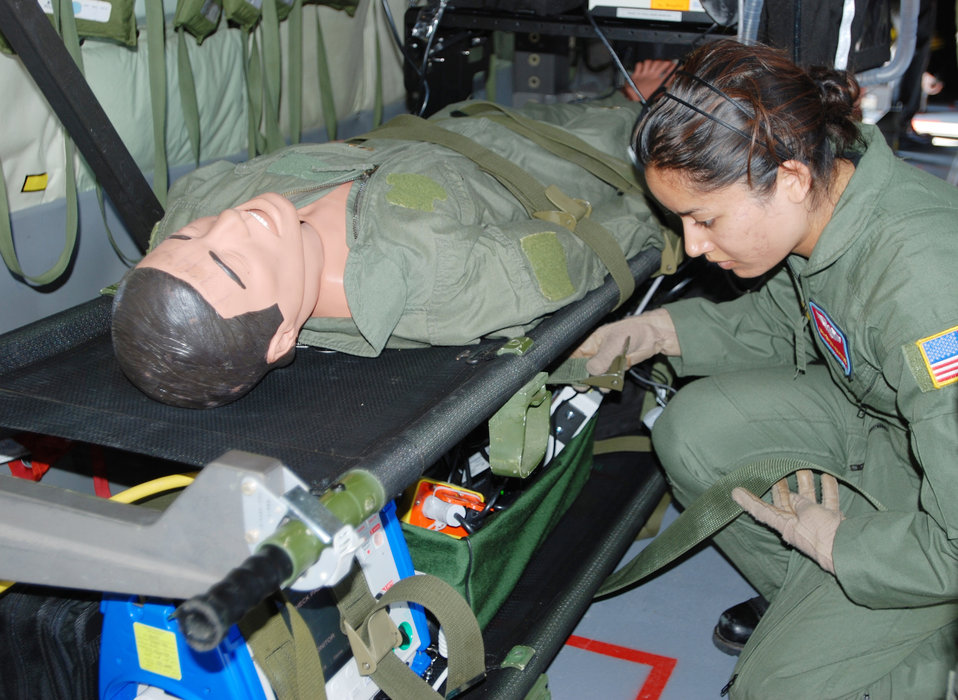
KC-135 could carry more critical patients

Senior Airman Erika Akamine checks aeromedical equipment during an exercise in a modified KC-135 Stratotanker June 18 at Scott Air Force Base, Ill. Airman Akamine is assigned to the 375th Aeromedical Evacuation Squadron.